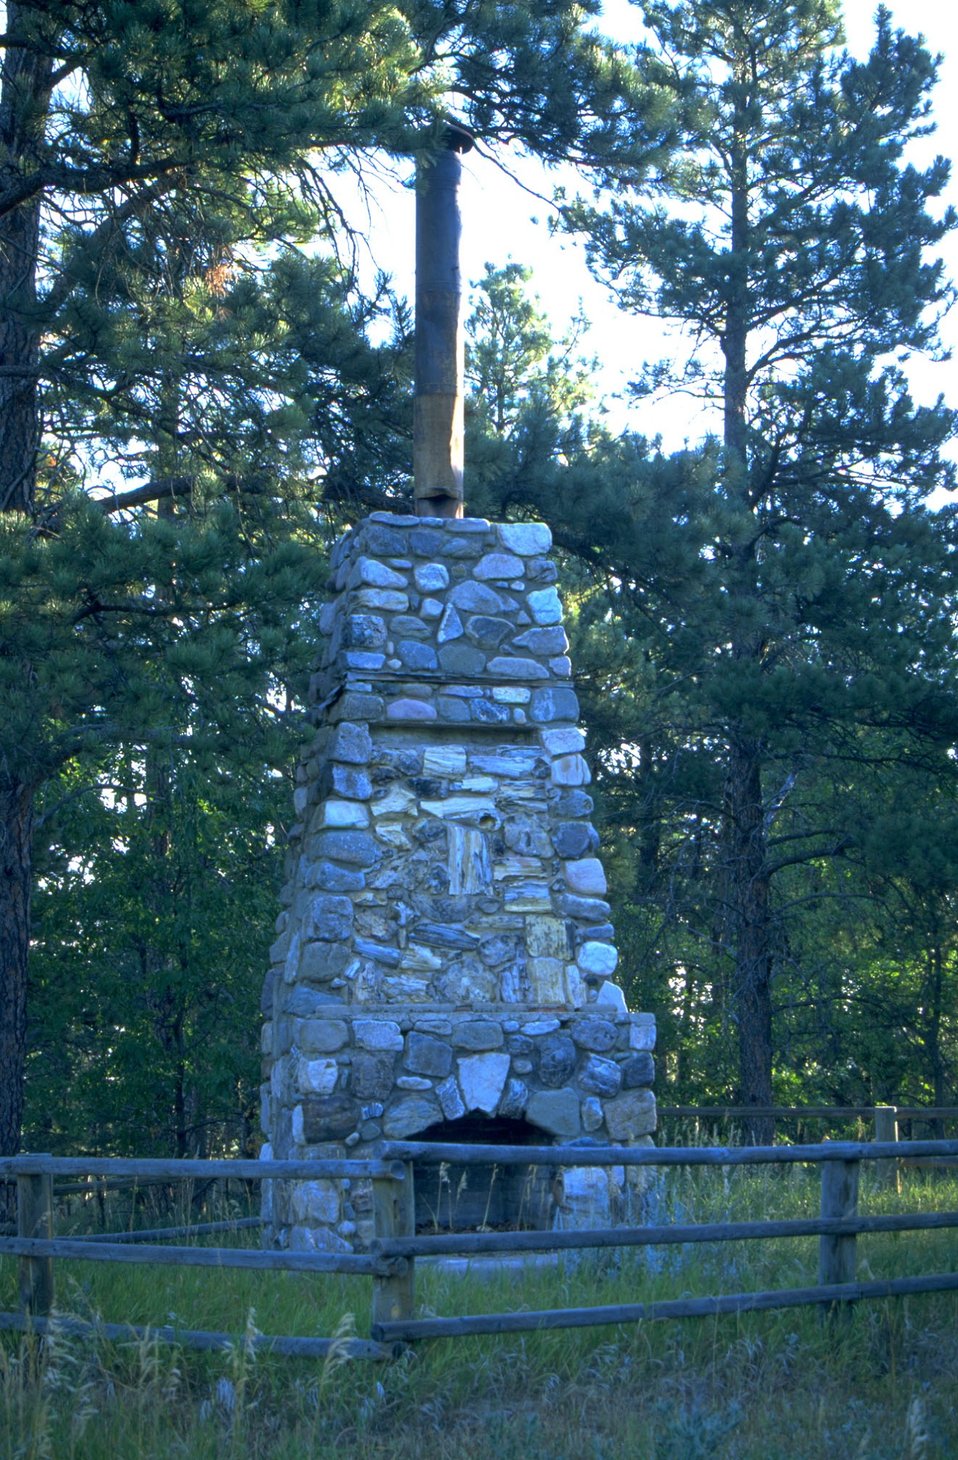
Camp Fechner, CCC Camp, Officer Quarters chimney